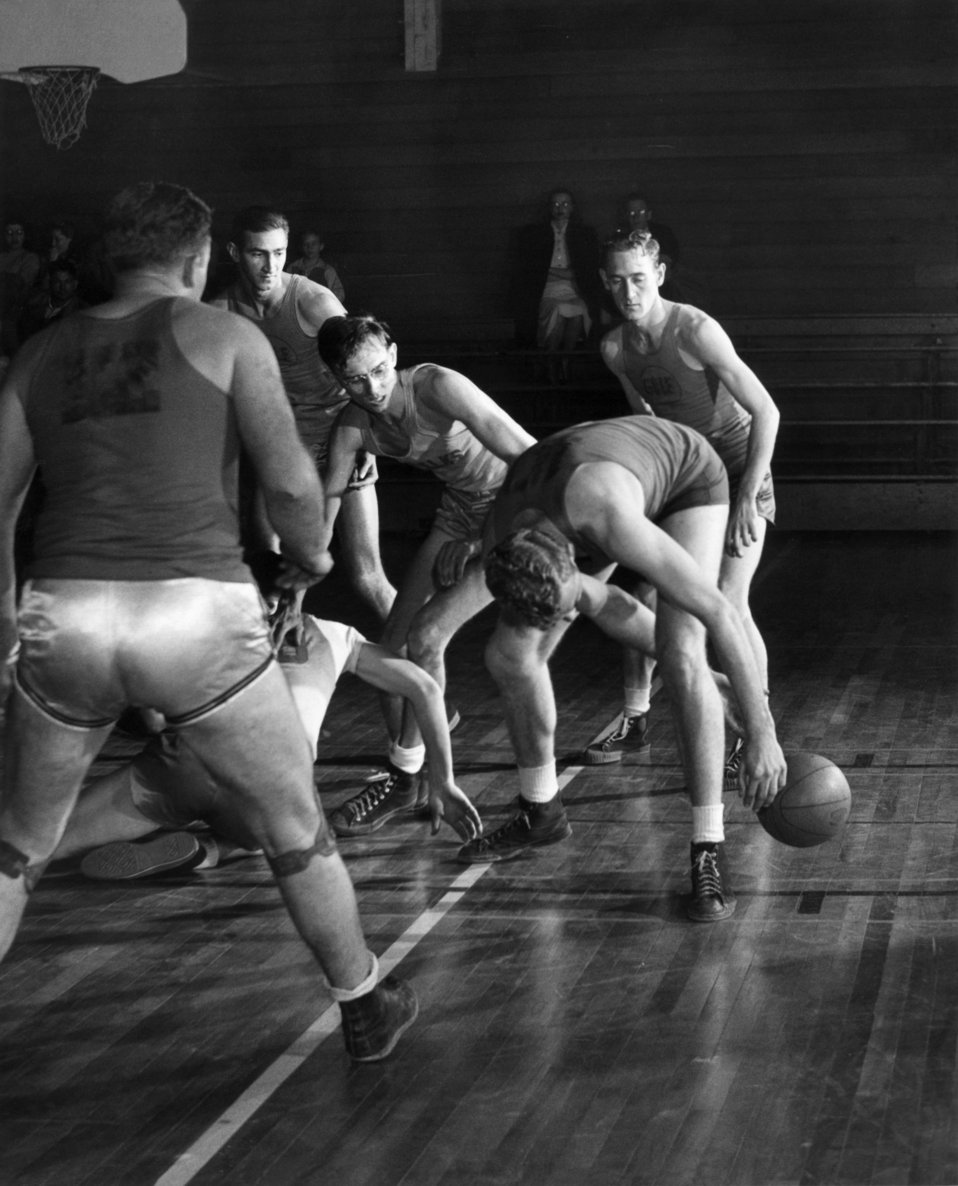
Basketball Pracitice Oak Ridge

NO#2 DOE photo Ed Westcott
Basketball pracitice 1940s